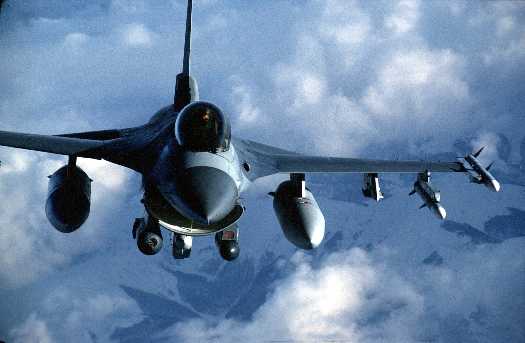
LANTIRN